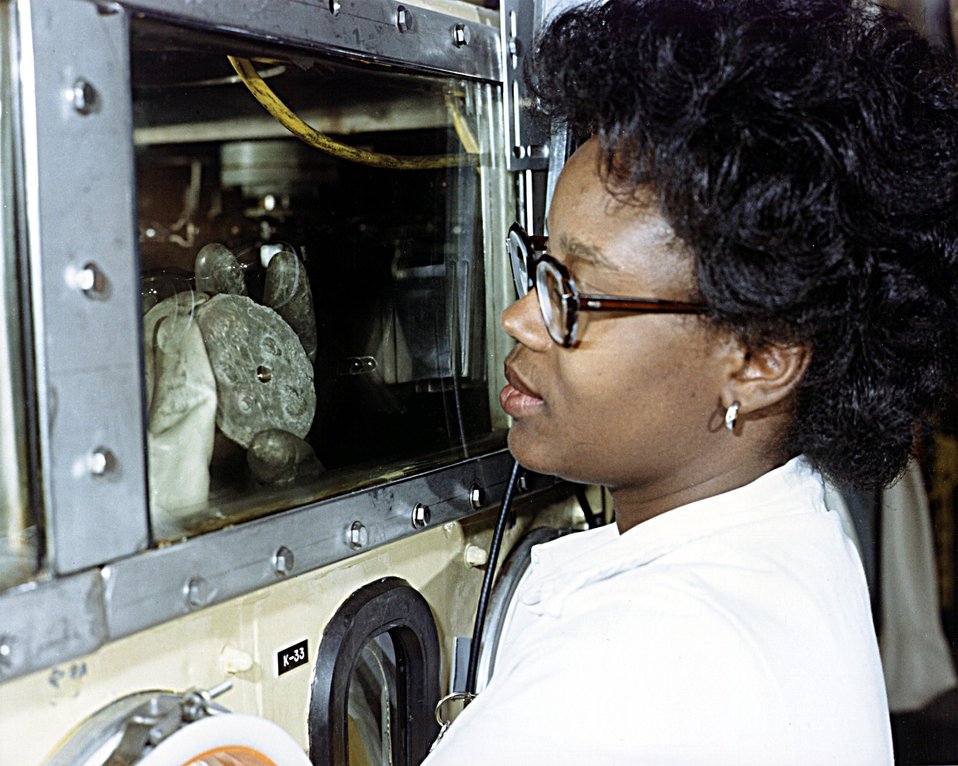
QUALITY ENGINEERING INSPECTOR REVIEWING A PLUTONIUM BUTTON IN BUILDING 707.

THE ROCKY FLATS PLANT MISSION IS THE NONNUCLEAR MANUFACTURING OF STAINLESS STEEL AND DEPLETED URANIUM PRODUCTS IN SUPPORT OF THE WEAPONS COMPLEX. SUBSEQUENT TO FY 1993, THE PRIMARY MISSION WILL TRANSITION TO ENVIRONMENTAL CLEANUP. CONTINGENCY CAPACITY FOR PLUTONIUM COMPONENT MANUFACTURING WILL BE MAINTAINED. PLUTONIUM PIT PRODUCTION AND SUPPORT OPERATIONS WERE SUSPENDED IN 1989 TO IMPROVE MAINTENANCE, TESTING AND OPERATION OF PLUTONIUM FACILITIES AND TO MAKE SAFETY, ENVIRONMENTAL, AND SECURITY IMPROVEMENTS.